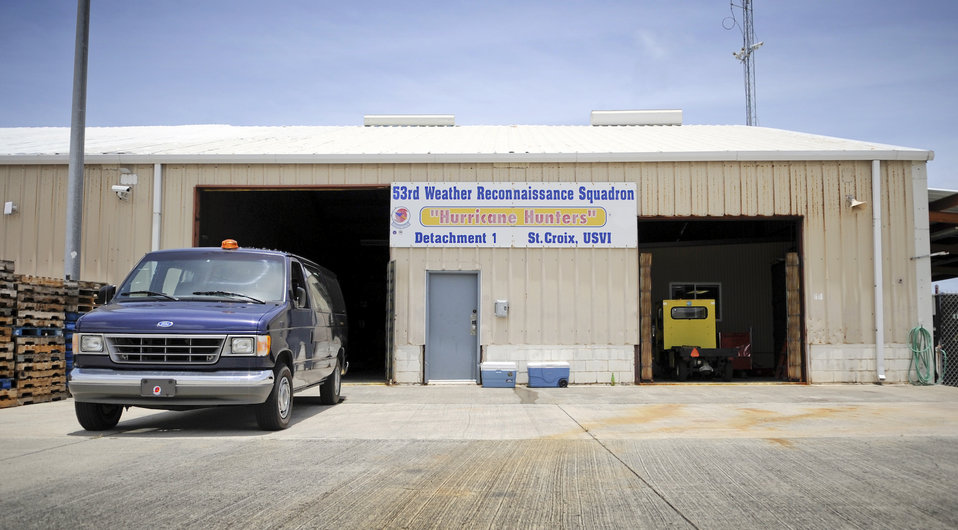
Training with the

The operations center for the 53rd Weather Reconnaissance Squadron at the St. Croix, V.I., airport is a small building with few amenities, but it is an important hub when there are active hurricanes. During the off-season, the squadron trains from this location when flying over the Caribbean.